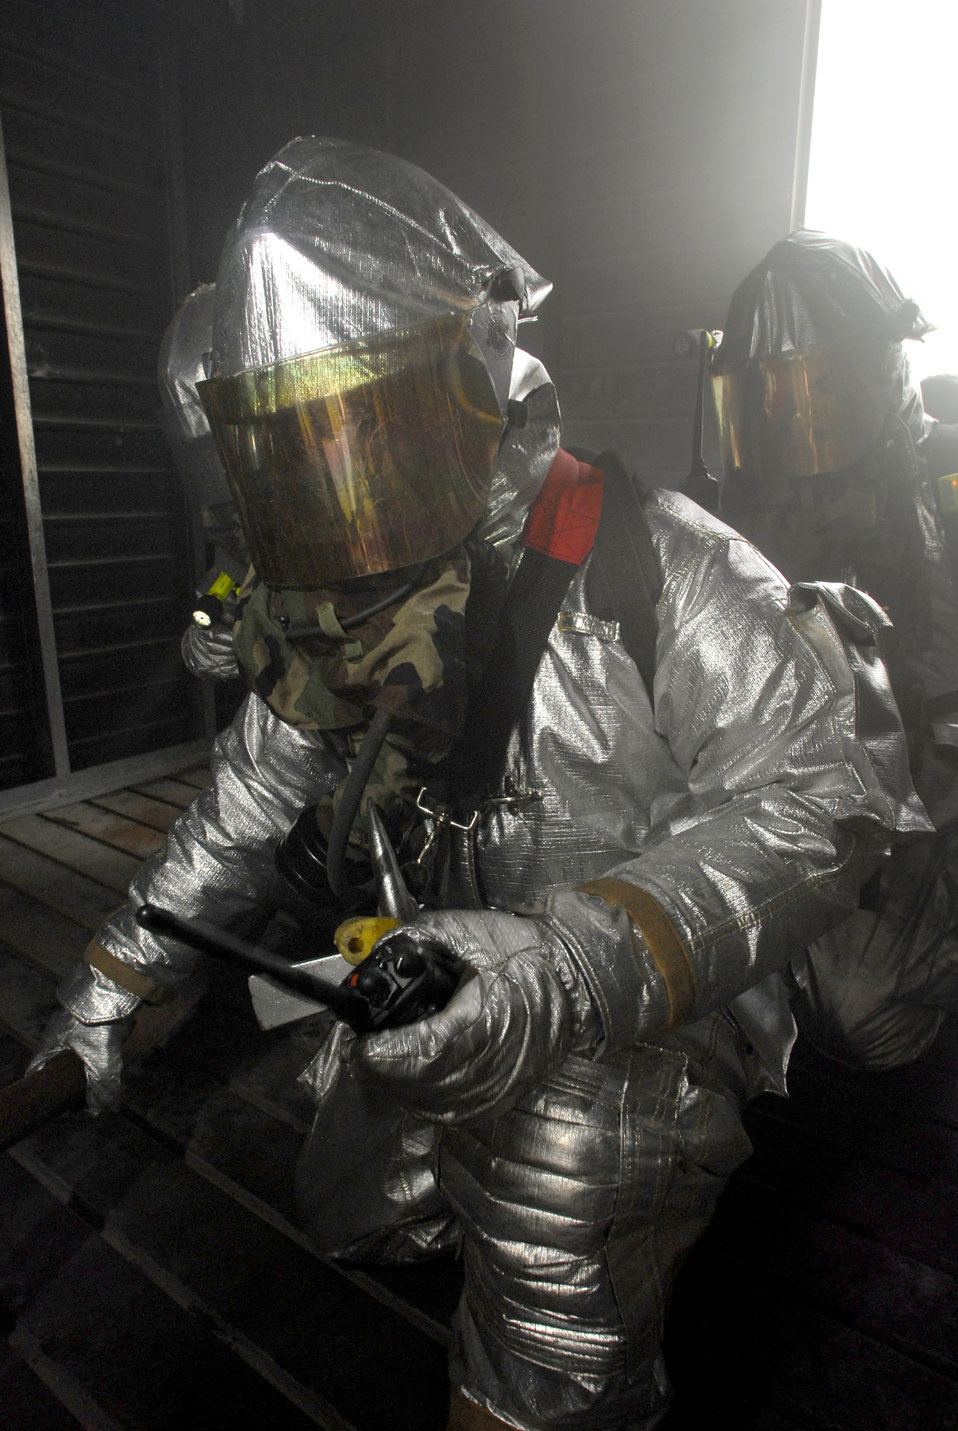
Into the fire

Firefighters from the 8th Civil Engineer Squadron respond to a simulated fire during an operational readiness inspection April 17 at Kunsan Air Base, South Korea. Kunsan AB is currently undergoing an operational readiness inspection to test the 8th Fighter Wing's ability to conduct its wartime mission.